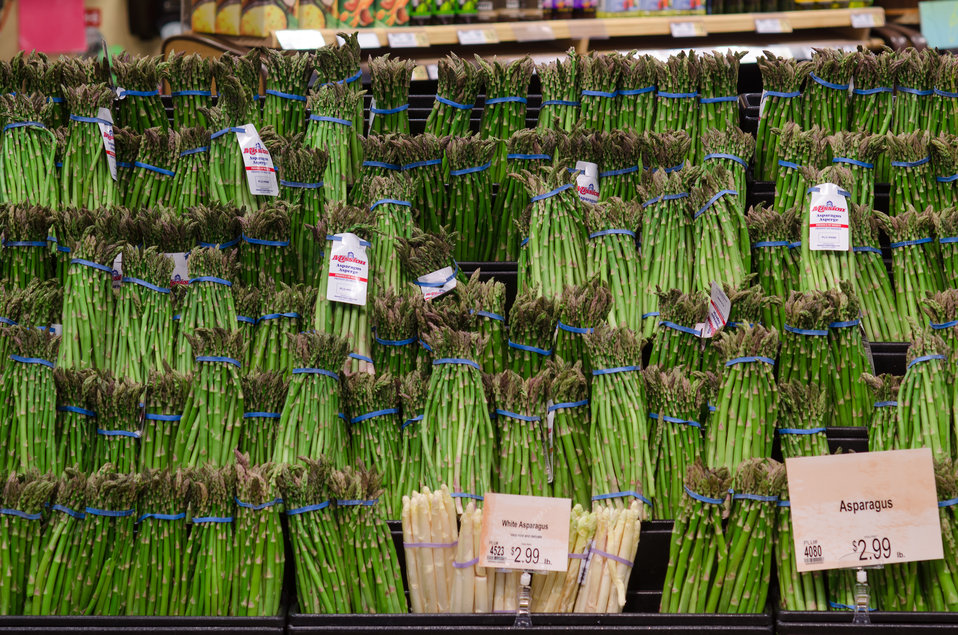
Asparagus at a grocery store in Fairfax, Virginia, on March 3, 2011.